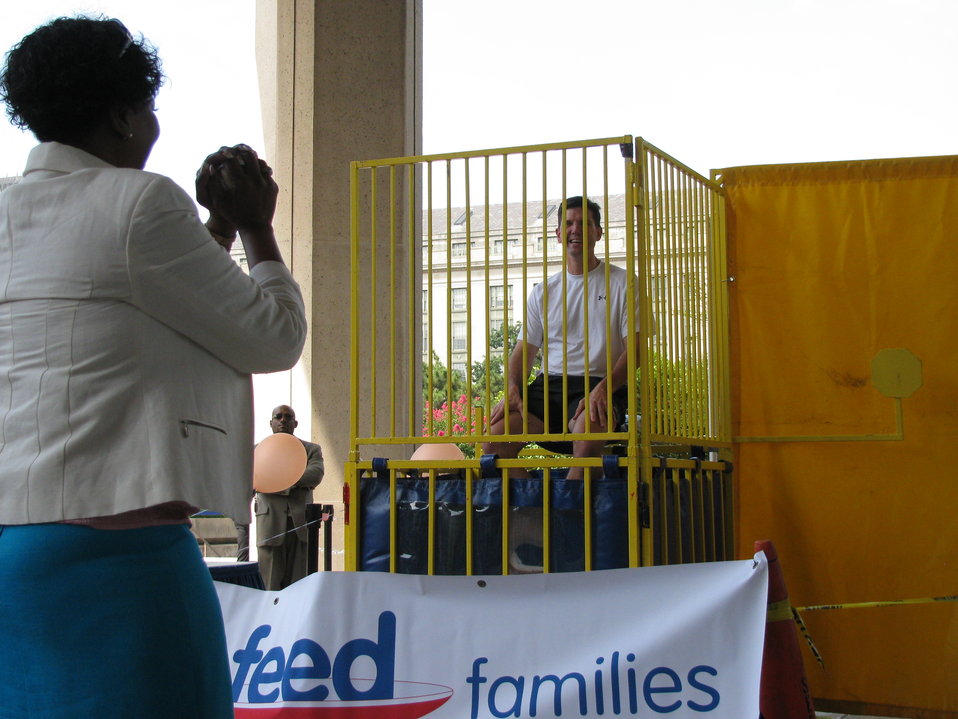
Ed McGinnis in the dunk tank